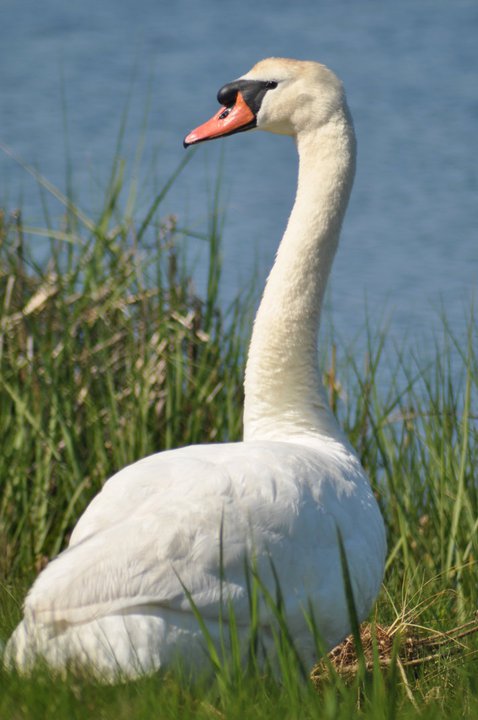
Mute Swan

A mute swan at the Nantucket National Wildlife Refuge, MA.